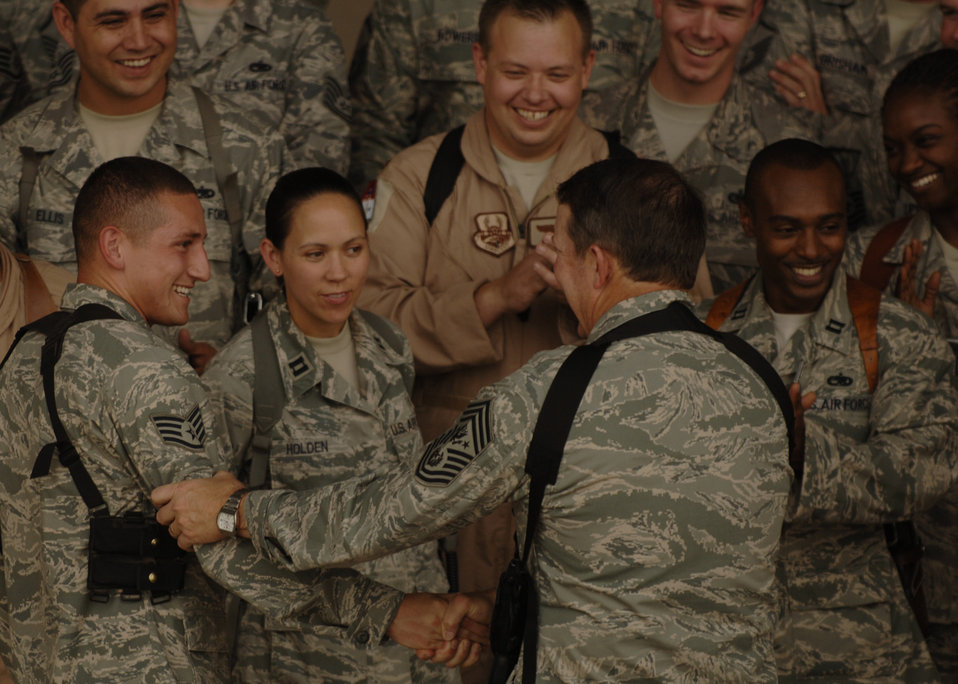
Chief of Staff tours Iraq

Chief Master Sergeant of the Air Force Rodney McKinley talks with members of the coalition air force training team at New Al-Muthana Air Base, Iraq, Oct. 24.